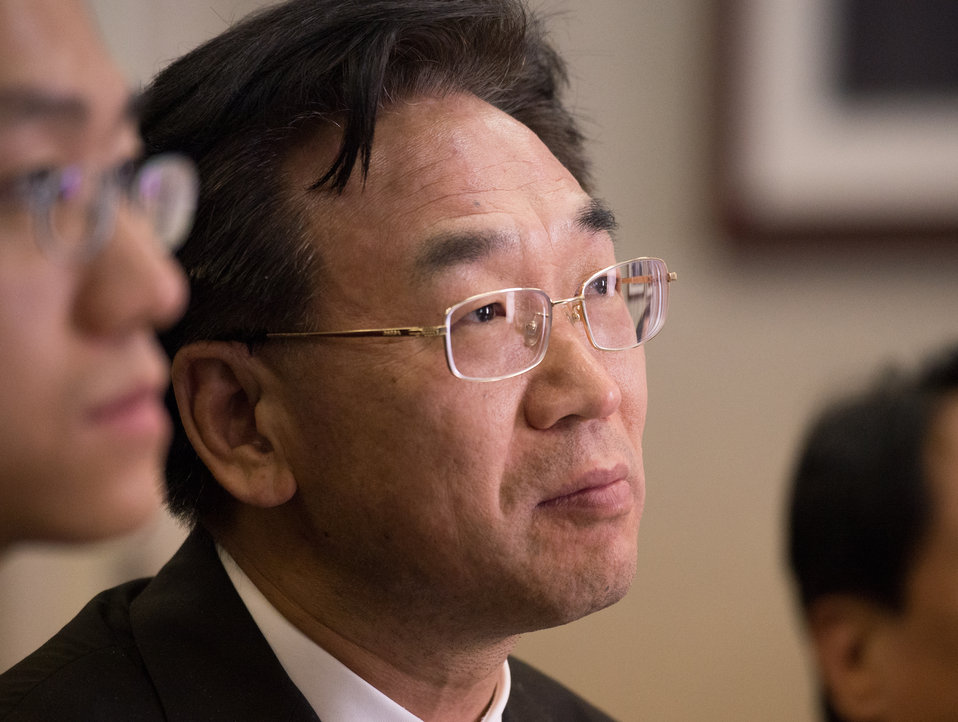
The People’s Republic of China Ministry of Agriculture (MOA) Vice Minister H.E. Zhang Taolin heads the Chinese Agricultural Delegation meeting with U.S. Department of Agriculture (USDA) Under Secretary for Natural Resources and Environment (NRE) Robert Bonnie and other USDA leaders at the USDA headquarters Whitten Building, in Washington, D.C., on Friday June 13, 2014.